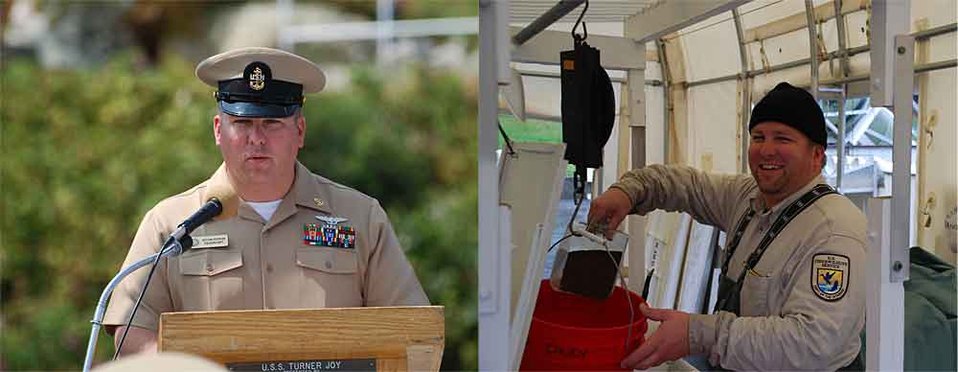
Mike Steward served with the U.S. Navy from 1992 to 2012, retiring from the USS RONALD REAGAN aircraft carrier, as an Aviation Ordanceman Chief Petty Officer (AOC). His most recent deployment, in 2011, involved supporting Operation Enduring Freedom and providing humanitarian support to Japan after the Tohoku earthquake and tsunami. He took part in the first strikes against the Taliban after September 11, 2001, remembering, “As an AOC, I have never worked so hard and saw so much ordnance in my life.” Steward was hired by the Quilcene National Fish Hatchery on September 4, 2012. His job involves various duties in raising and rearing salmon.